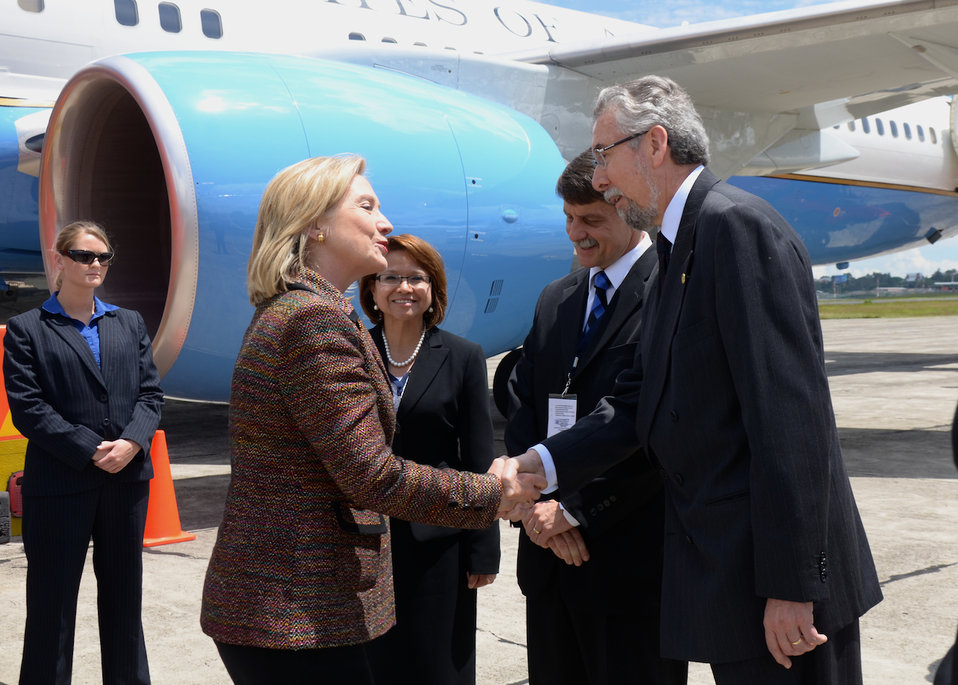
Secretary Clinton Is Greeted By Guatemalan Ambassador to the U.S. Villagran and Ambassador McFarland

U.S. Secretary of State Hillary Rodham Clinton is greeted by Guatemalan Ambassador to the United States Francisco Villagran, shaking hands with the Secretary, and U.S. Ambassador to Guatemala Stephen G. McFarland, center right, upon her arrival to Guatemala City, Guatemala, on June 22, 2011.